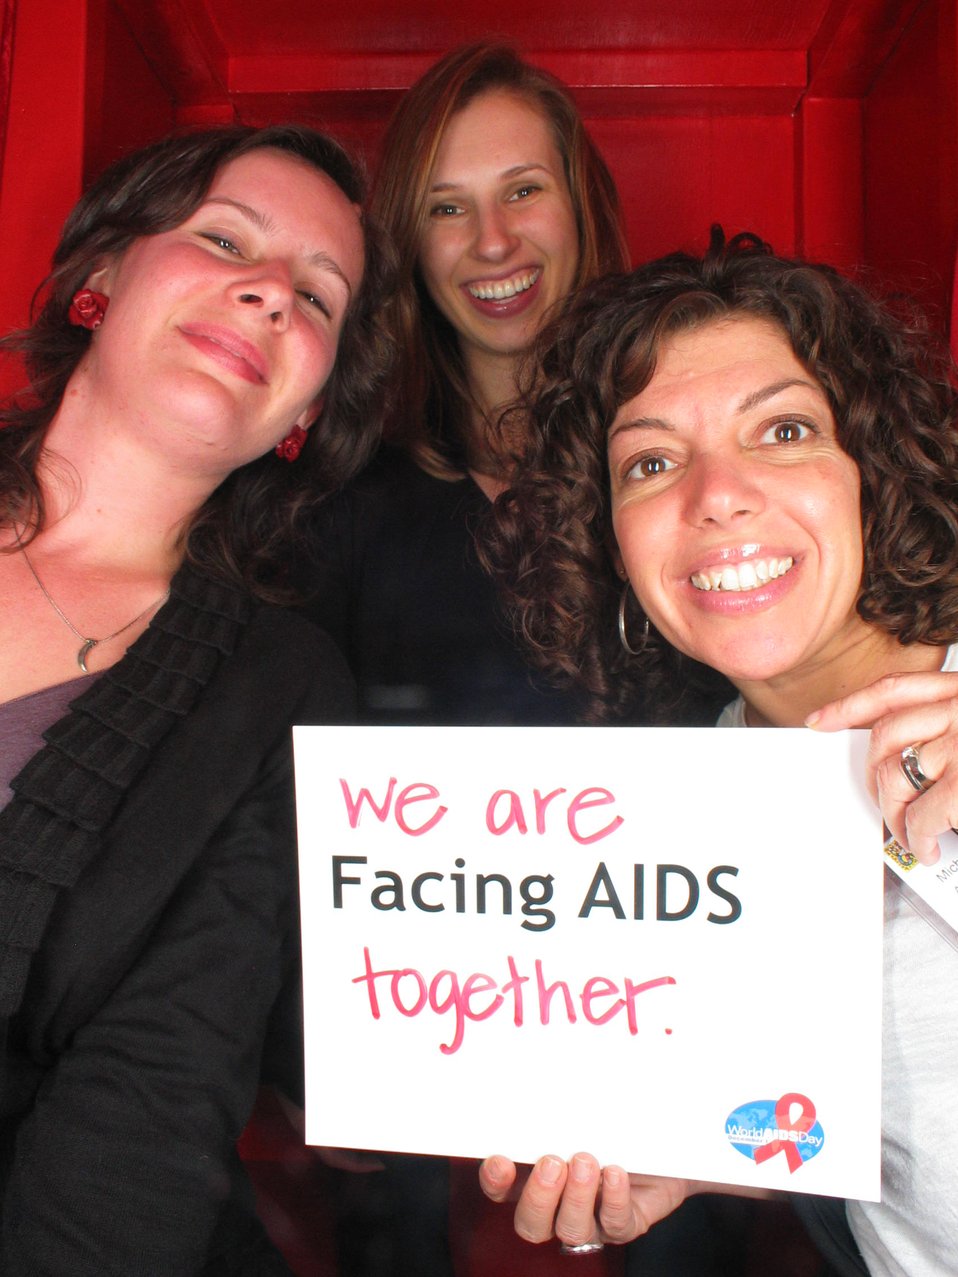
We are Facing AIDS together.